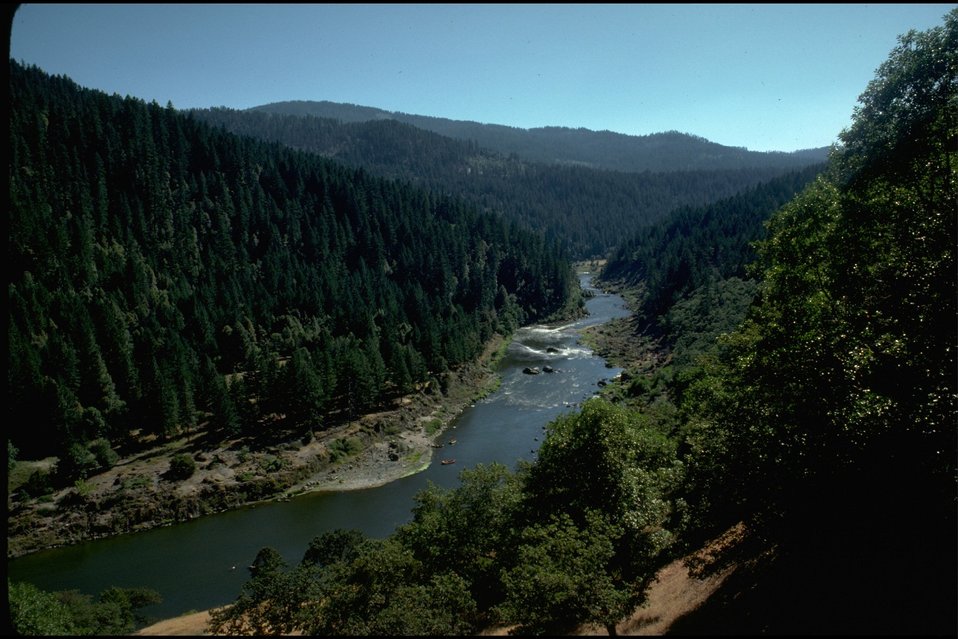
Rogue River - Corral Creek, down river to Winkle Bar. Battle Bar in foreground on left.